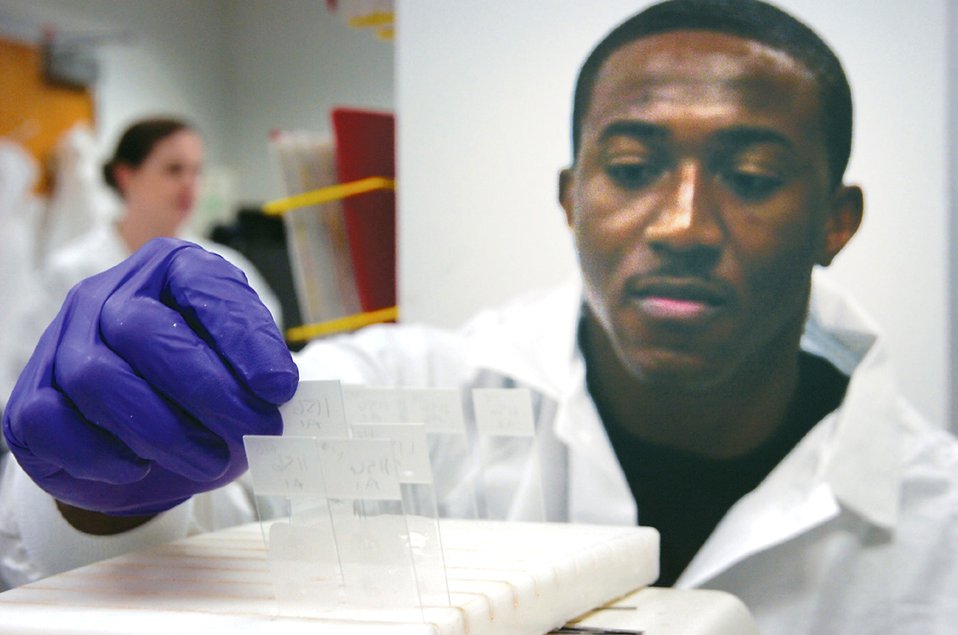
Histopathology provides rapid diagnosis

Airman 1st Class Michael Newford catalogs breast tissue specimens in a slide tray holder. The specimens will later be diagnosed by a pathologist. Airman Newford is one of seven histopathology technicians at the 89th Medical Support Squadron pathology department at Andrews Air Force Base, Md.